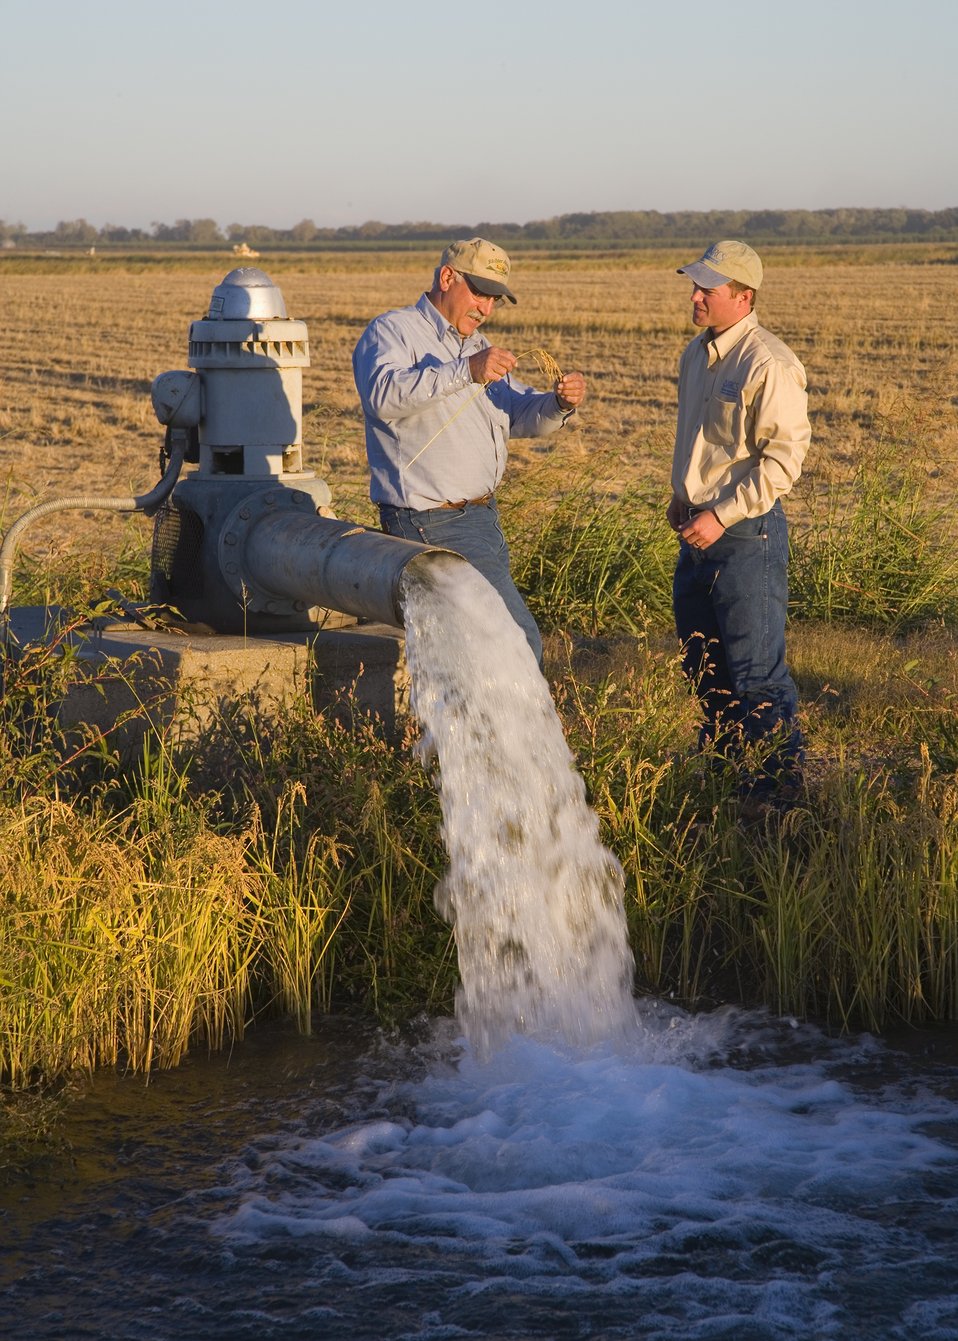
Tailwater recover pump in Sacramento California.